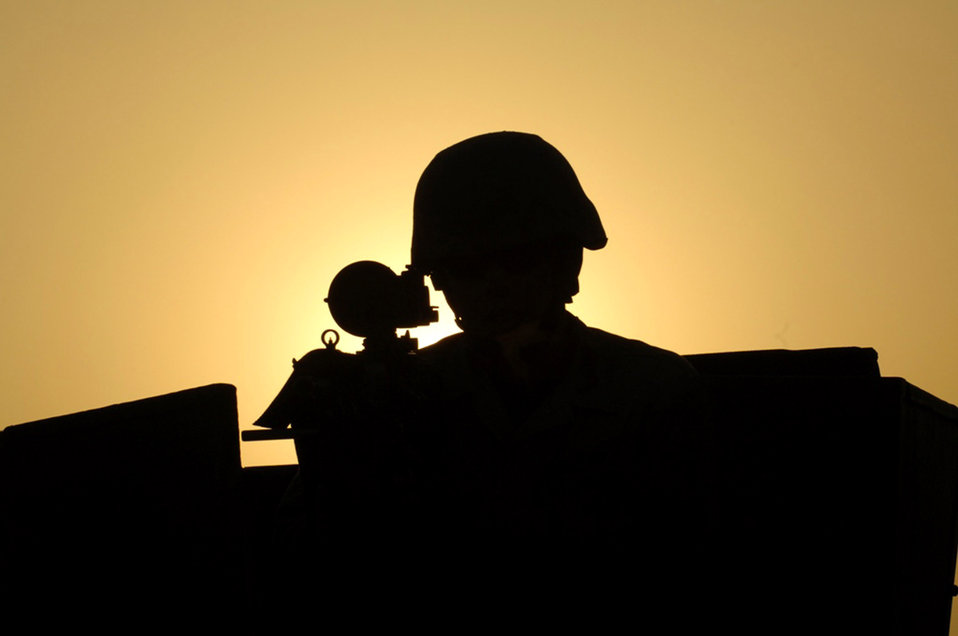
Keeping the compound safe

A member of the 407th Expeditionary Security Forces Squadron at Ali Air Base, Iraq, scans the surrounding area from the gun mount of his Humvee during a patrol June 22. The members of the 407th ESFS are charged with protecting the base's vital assets.